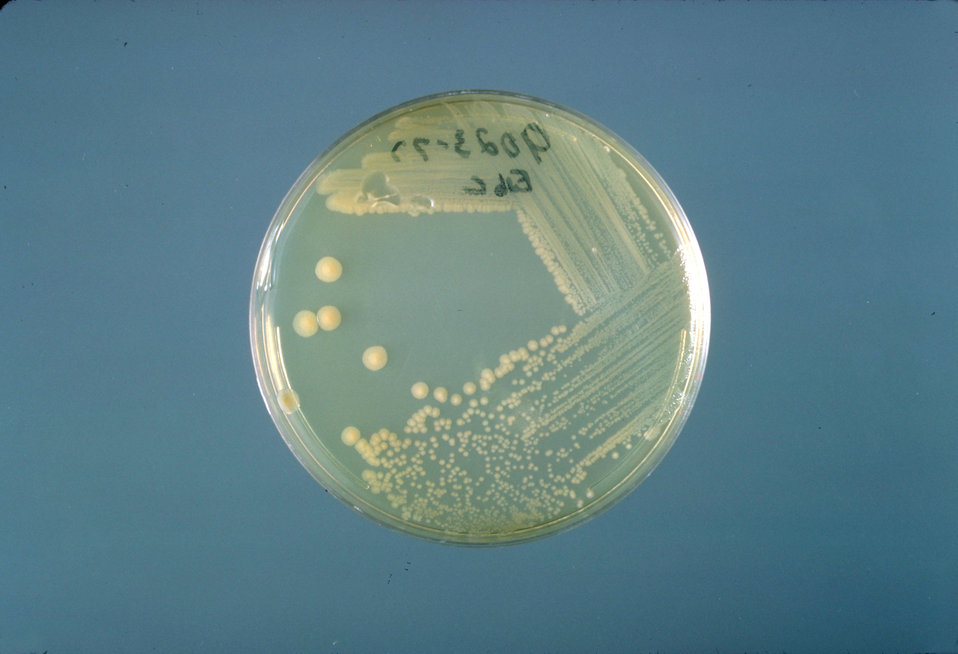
This is a trypticase soy agar plate culture of Enterobacter sakazakii after three days of growth at 25� C.